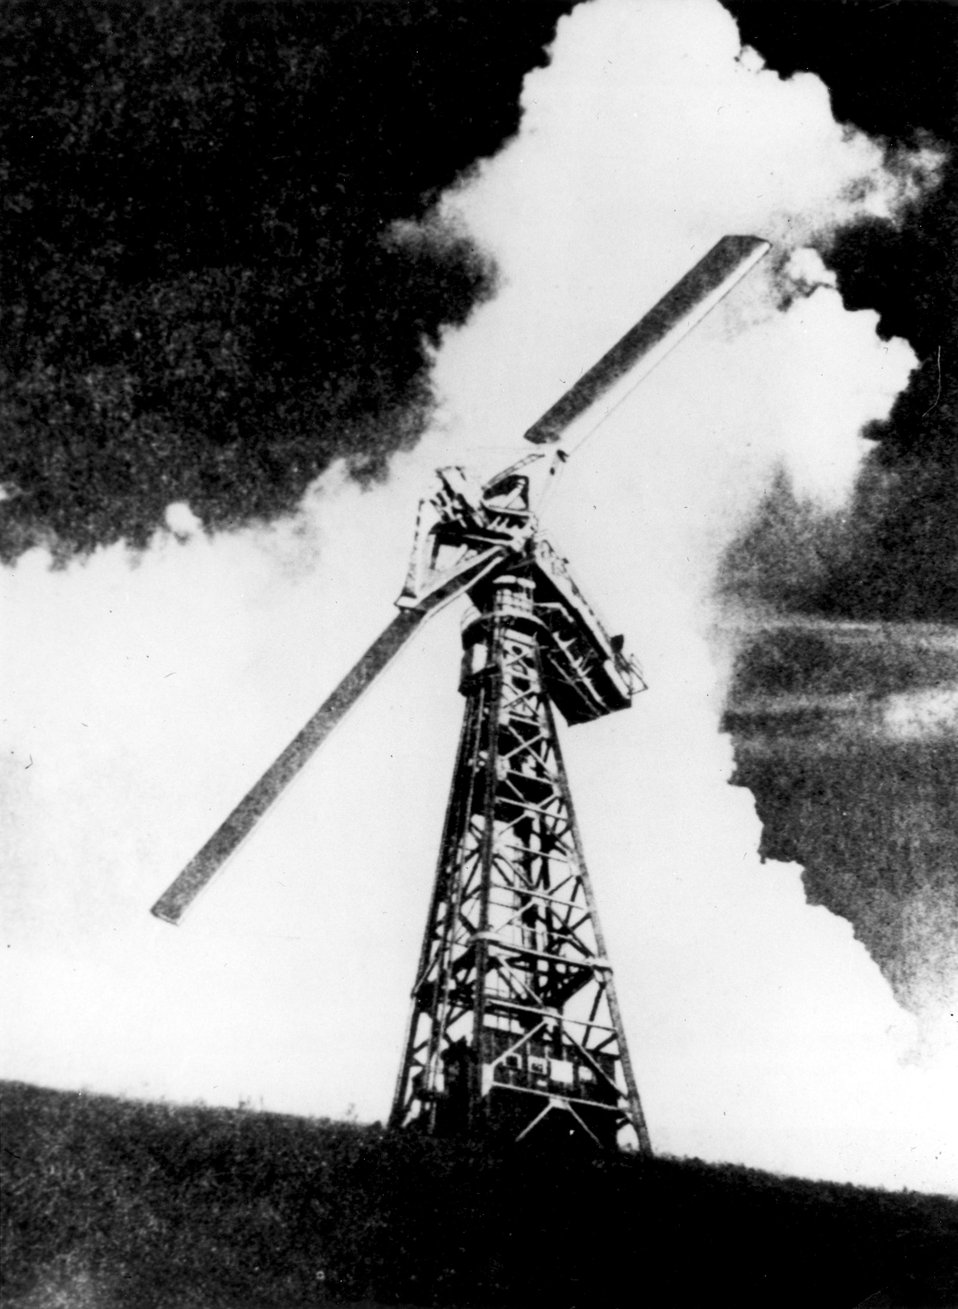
The largest wind turbine in history was the Smith-Putnam wind generator, constructed more than thirty years ago in Vermont. c. 1977